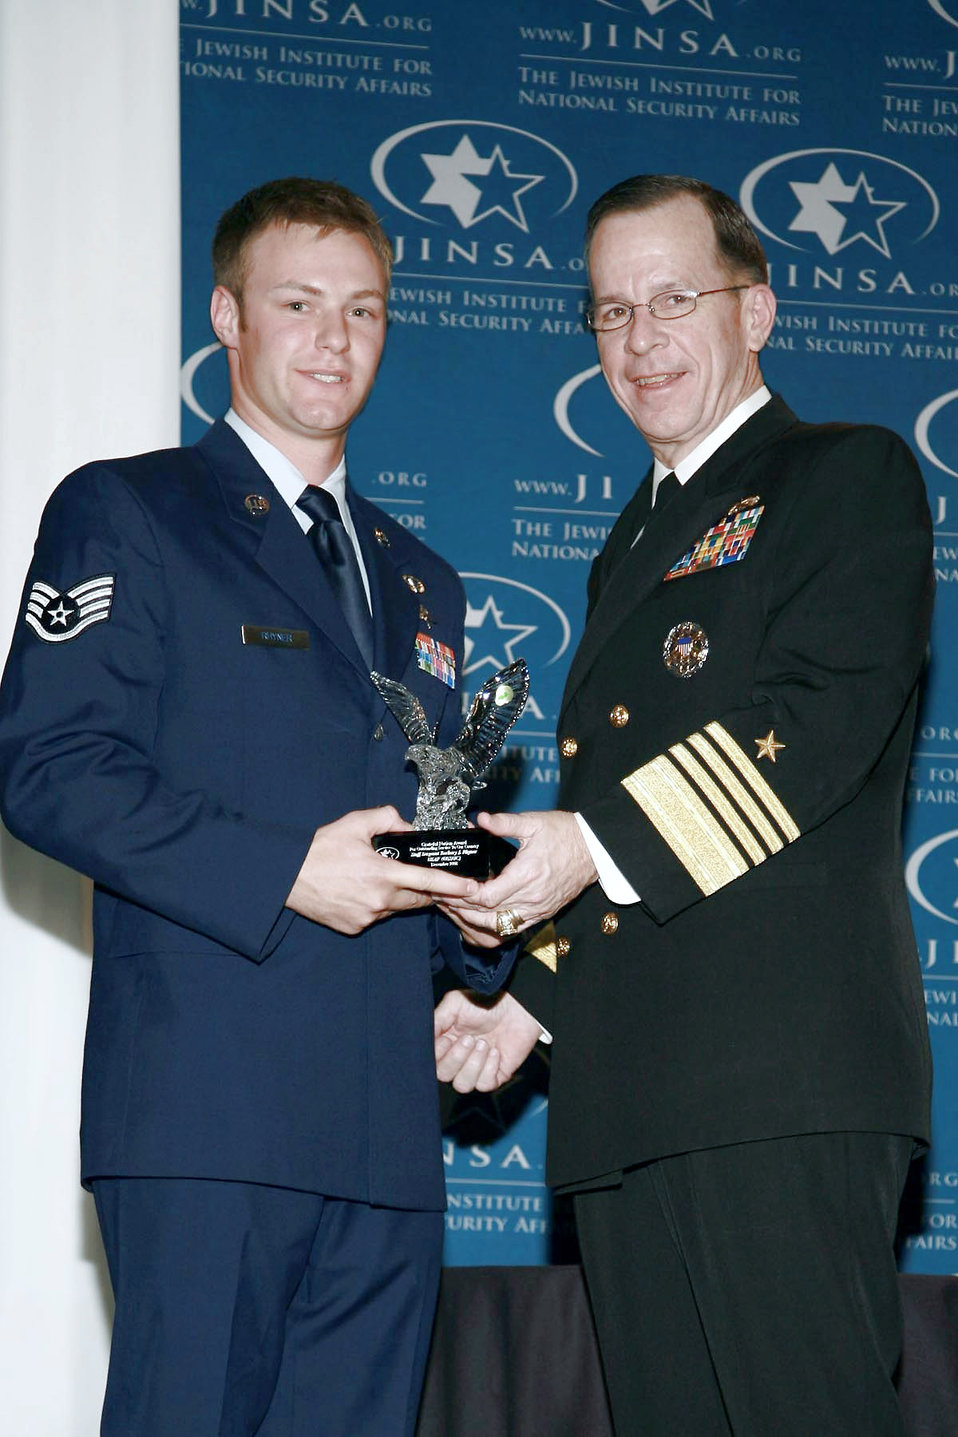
Airman saves lives in Afghanistan

Staff Sgt. Zachary Rhyner receives the Jewish Institute for National Security Affairs Grateful Nation Award from Navy Adm. Michael C. Mullen during the Grateful Nation Award Ceremony Dec. 8 in Washington, D.C. Sergeant Rhyner is a a special tactics combat controller assigned to the 21st Special Tactics Squadron at Pope Air Force Base, N.C., and Admiral Mullen is the chairman of the Joint Chiefs of Staff.